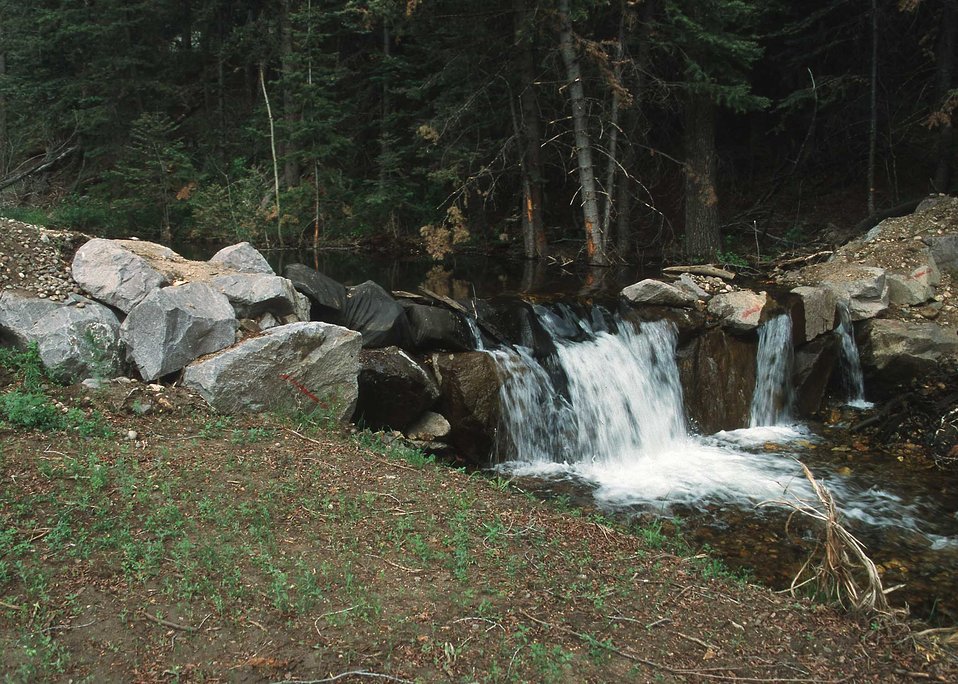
Fish Barrier on Trinchera Creek/FT-Ranch.